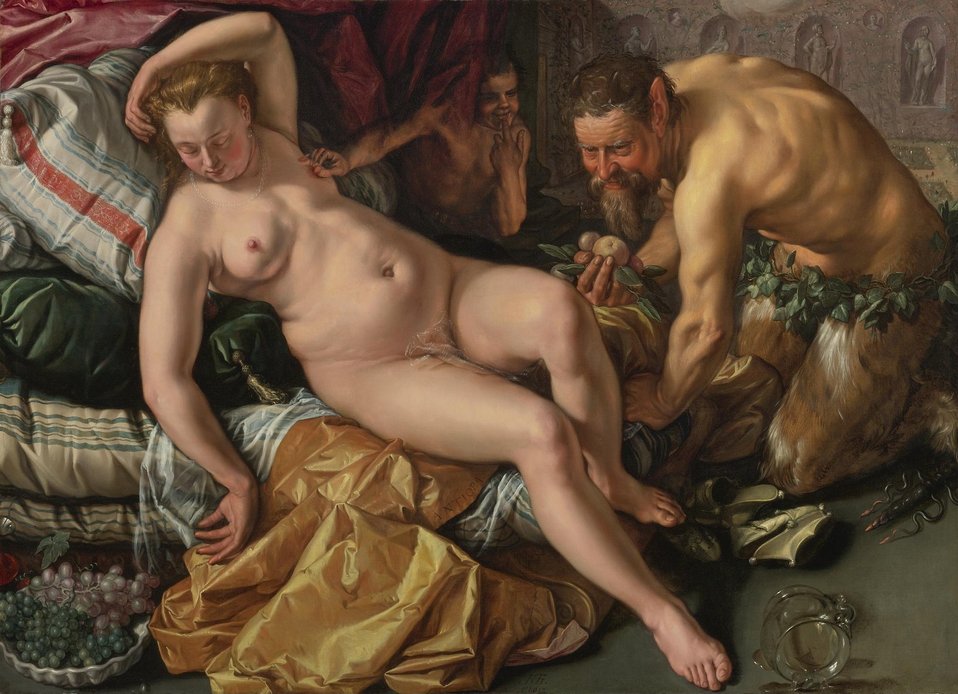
'Jupiter and Antiope', oil on canvas painting by Hendrick Goltzius